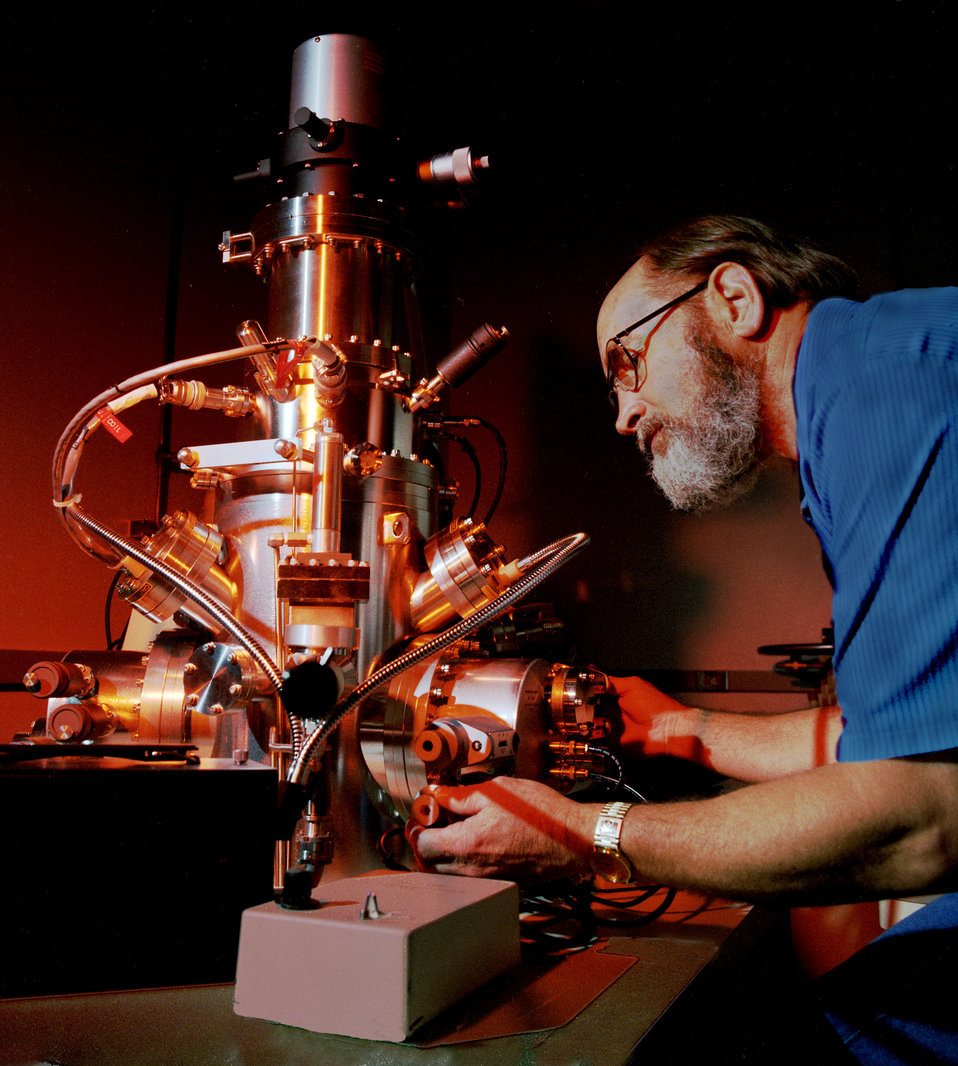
Ray Padgett operating Electron Microscope at the High Temperature Materials Laboratory at Oak Ridge

YP434187 DOE photo by Lynn Freeny

Ray Padgett operating Electron Microscope at the High Temperature Materials Laboratory at Oak Ridge National Lab 8-27-1987